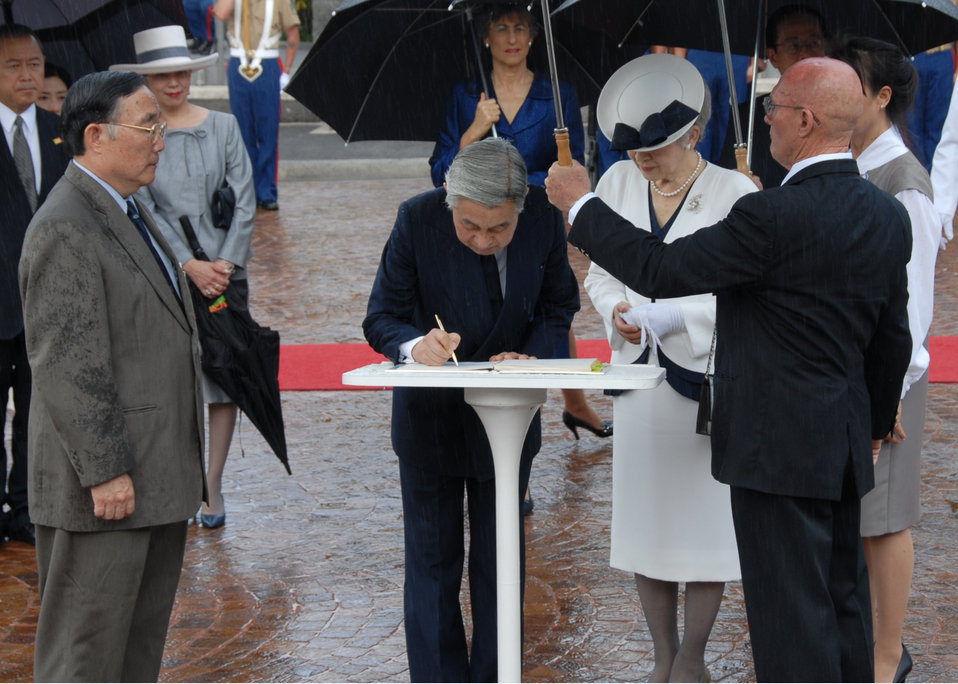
Japanese royalty honors America's fallen

Emperor Akihito and Empress Michiko sign the guest book at the National Memorial Cemetery July 15 at Punchbowl Crater, Hawaii. The Imperial Couple lay a wreath to honor the interred at the cemetery. More than 50,000 service men and women are interred at the cemetery.